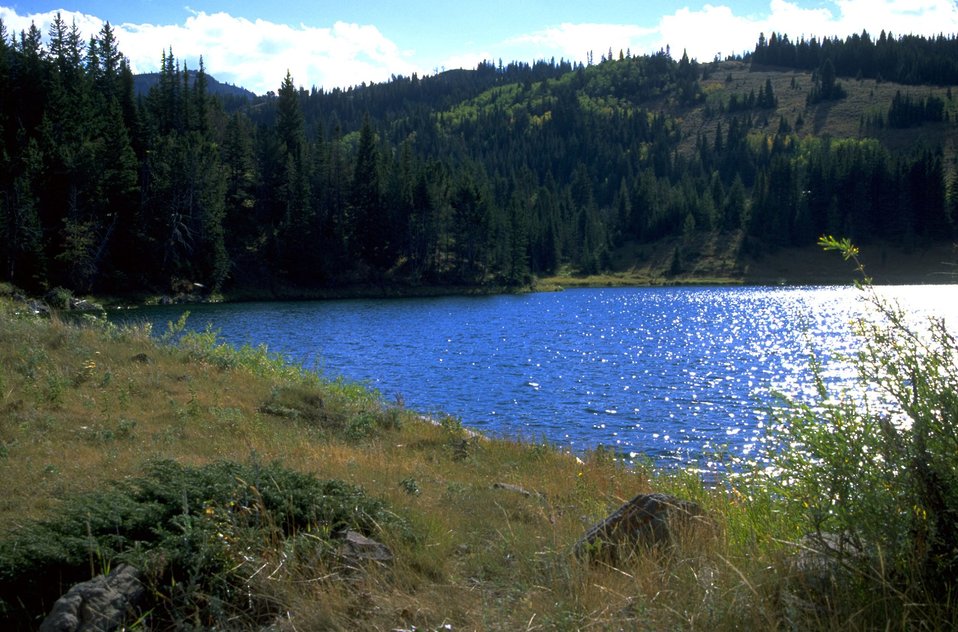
Sun reflecting on an tree-surrounded lake